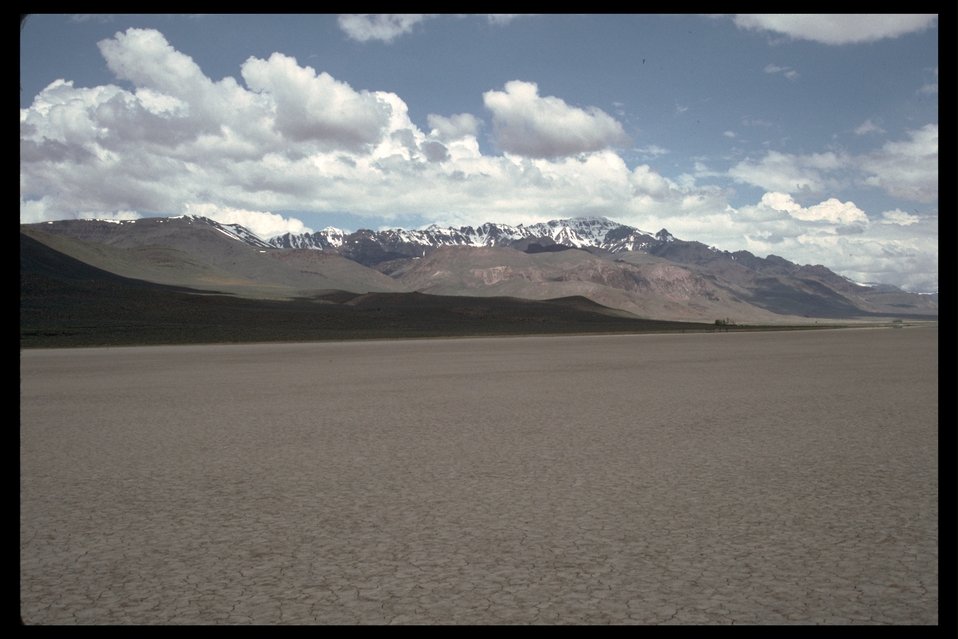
In the Alvord Desert on the Alvord Playa looking at the Steens escarpment. (WSA 2-74)